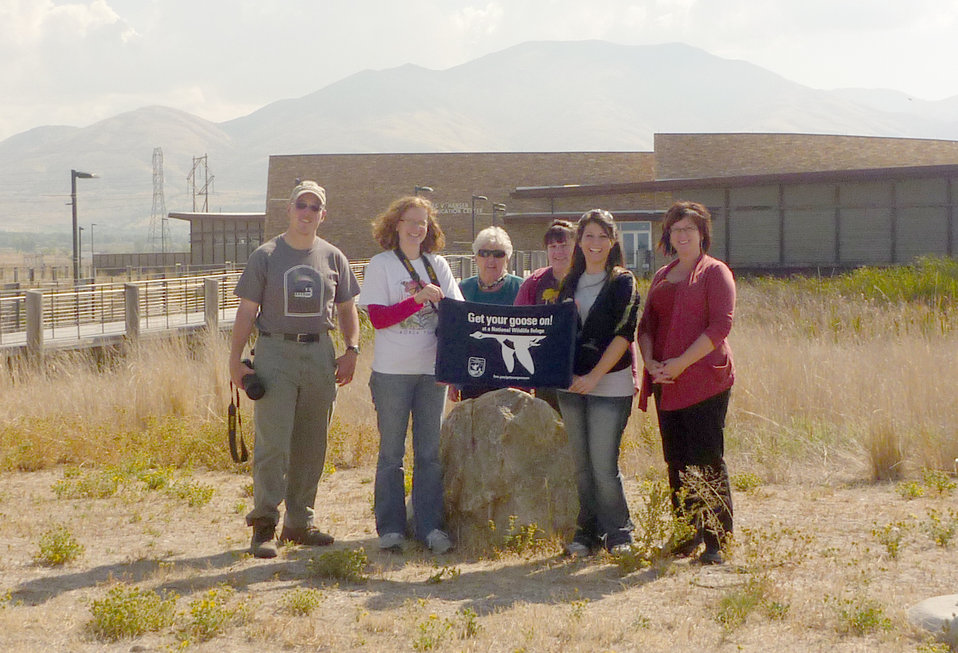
Get Your Goose On! - Bear River Style

Jr Duck Stamp Ambassadors visited Bear River Migratory Bird Refuge during the 2012 Federal Duck Stamp Art Contest.

Ninety-eight percent (98%) of the purchase price of Duck Stamps go towards acquisition of easements and property for our National Wildlife Refuge System.